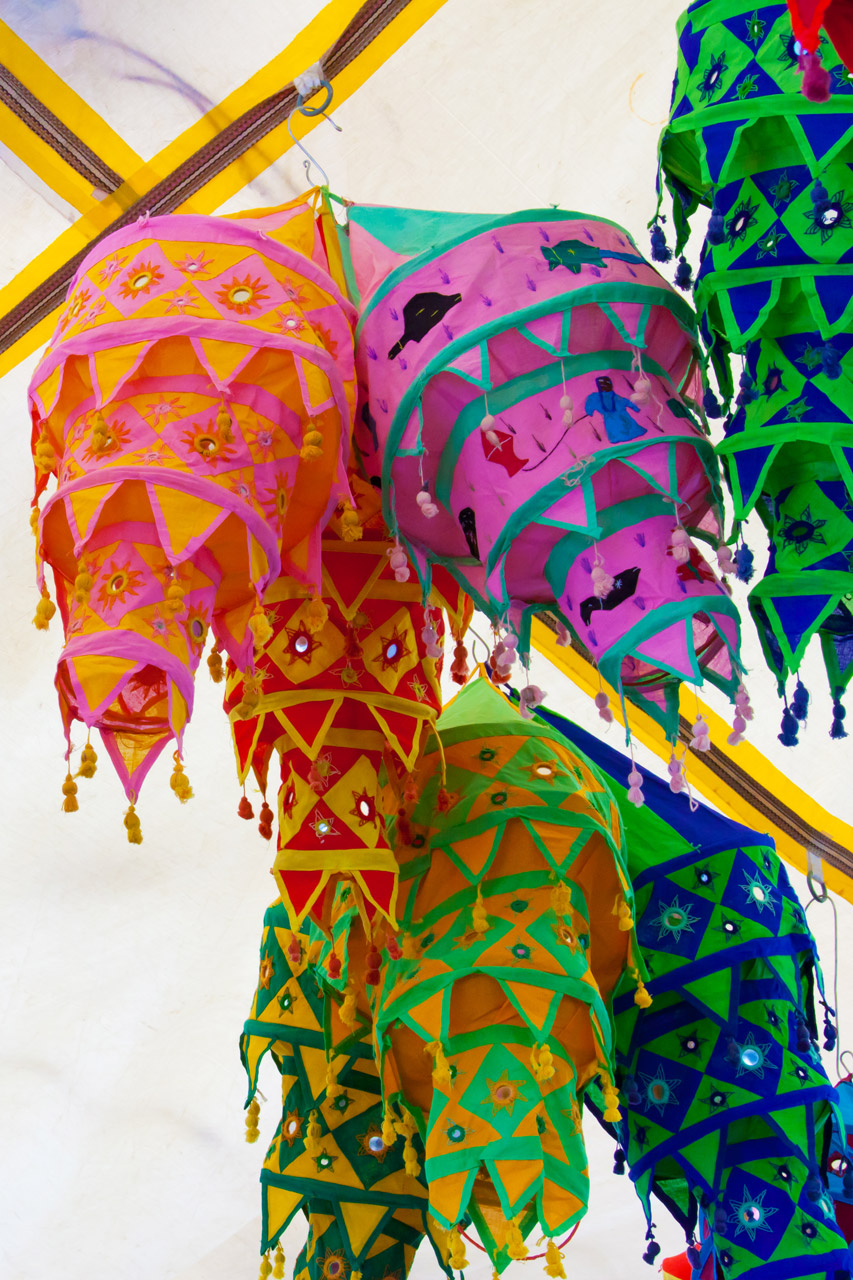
Turkish chandelier

Colorful turkish fabric chandeliers at the market.